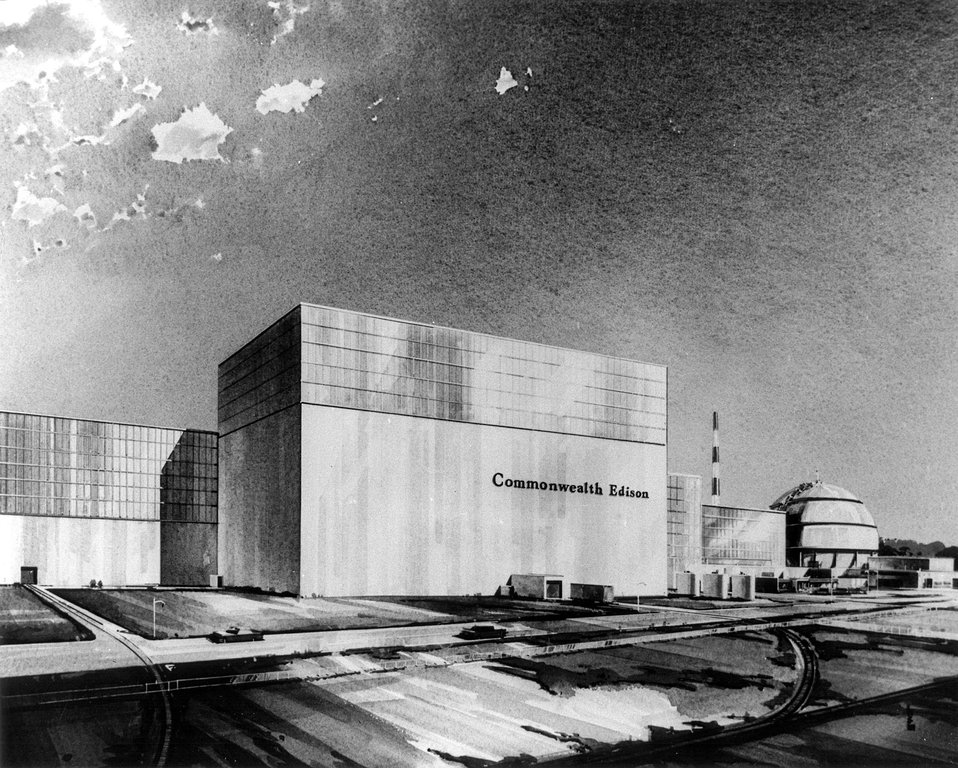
Two new units at the Commonwealth Edison Company's Dresden Reactor are under construction. Circa 1967.